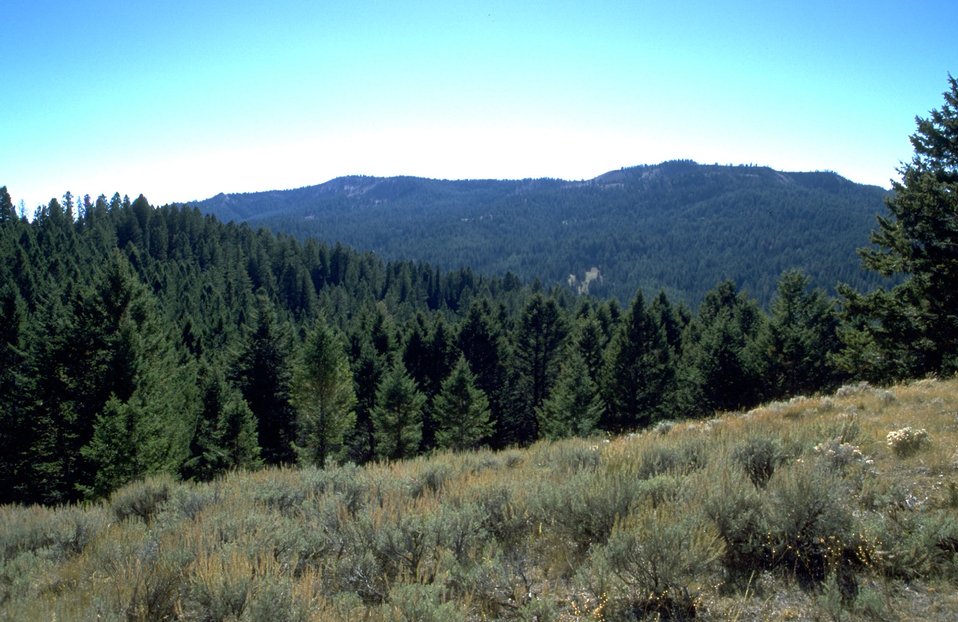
Sage Brush slope with forested valley in background